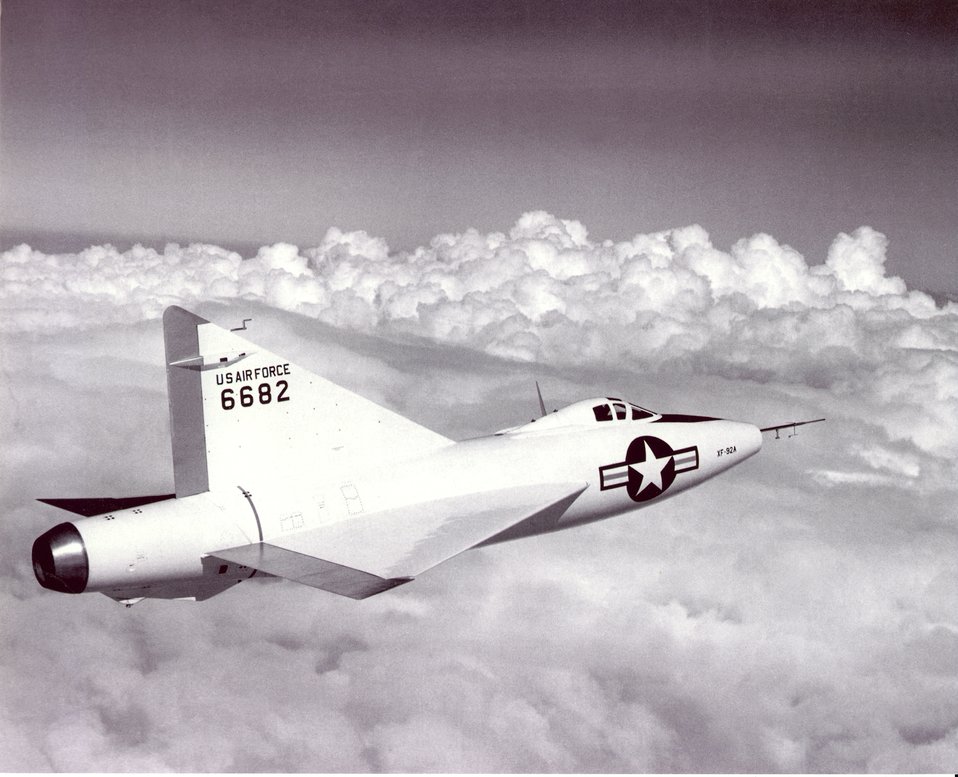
Convair X-F-92A

The Convair X-F-92A flies a test mission. The aircraft was a delta-wing concept demonstrator.